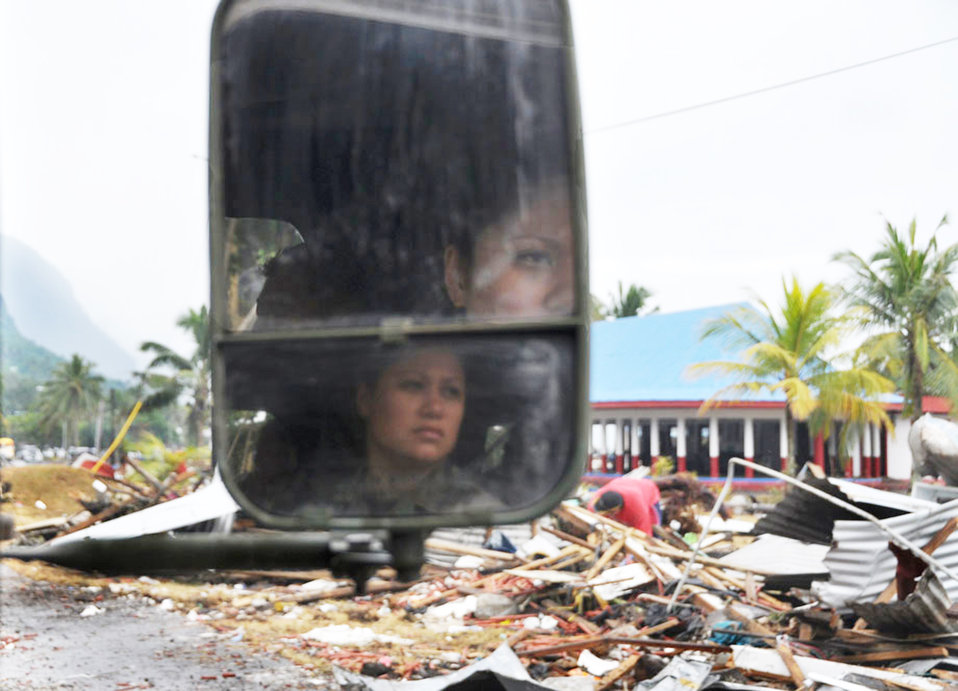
Tsunami devastation

Tech. Sgt. Carissa Maxson assesses the damage on the shorelines of Pago Pago, American Samoa, as she drives Oct. 1, 2009. Sergeant Maxson is conducting assessments of the area after a tsunami caused massive structural damage to the island Sept. 29, 2009. She is assigned to the Hawaii Air National Guard's 154th Medical Group, Chemical, Biological, Radiological/Nuclear and Explosives Enhanced Response Force Package.